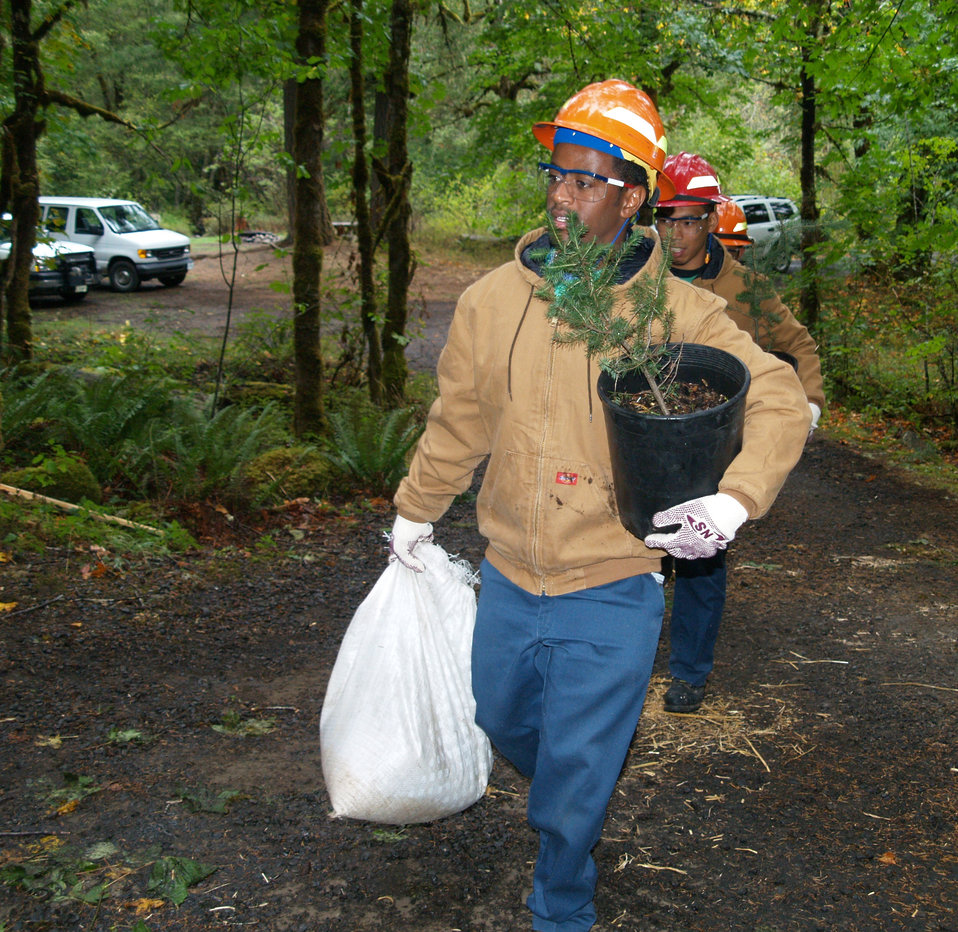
September 29, 2009. Estacada, OR. Timber Lake Job Corps Center student Biniyam Desta carries seeds and a young tree for to be used in a streamside restoration project on the Clackamas River. The project enhances the spawning areas of native salmon on the river.